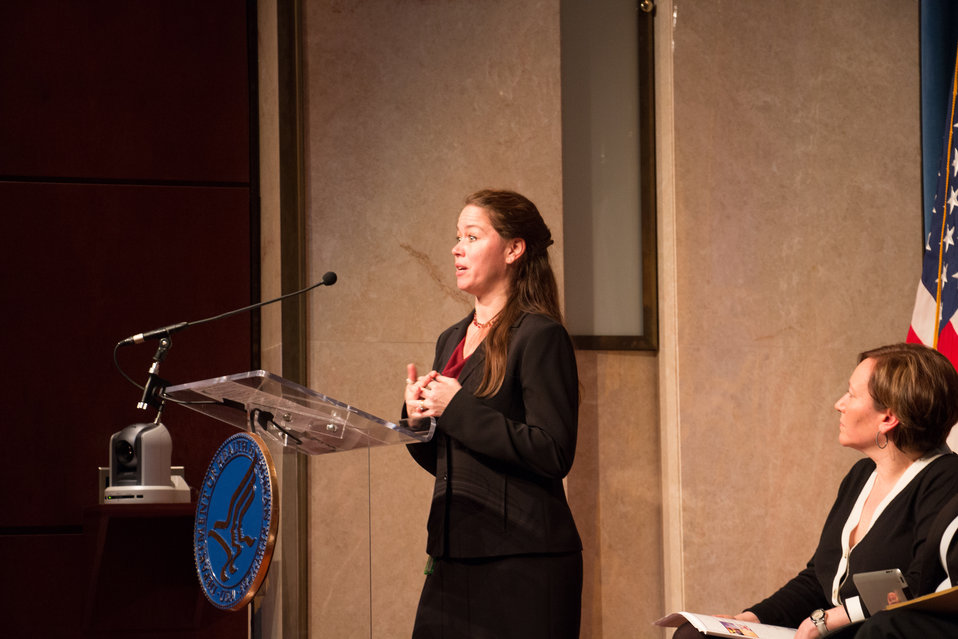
VHAP Launch (308 of 511)